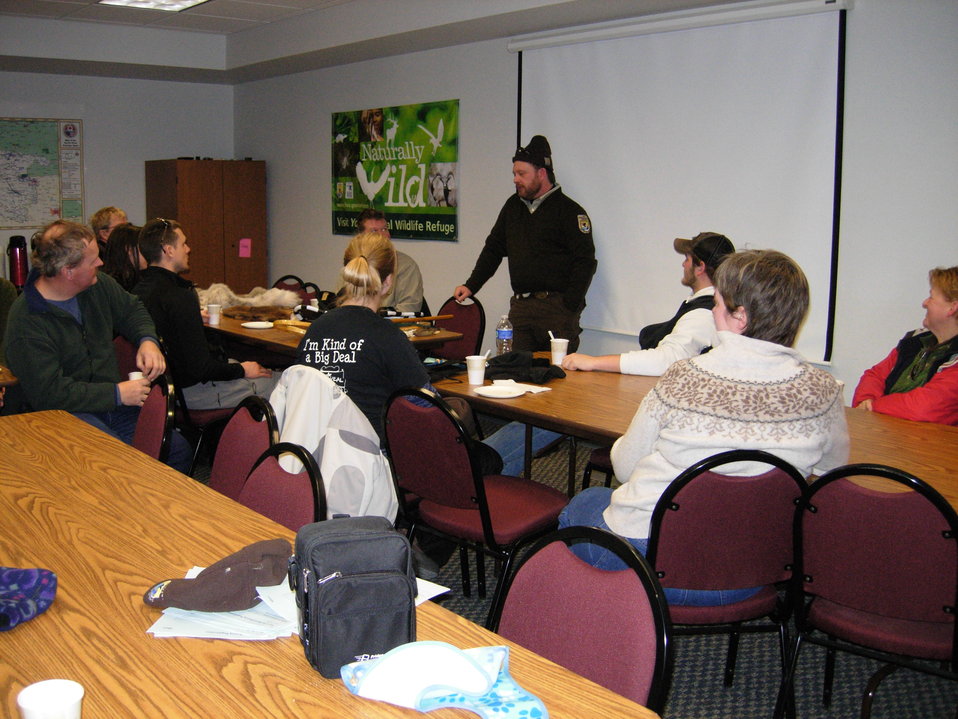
Learning About Snowshoeing

Instructor and Law Enforcement Officer, Tighe Teets, discussing the different types of snowshoes and winter ecology back at Des Lacs NWR headquarters. Participants enjoyed hot chocolate and home baked cookies.